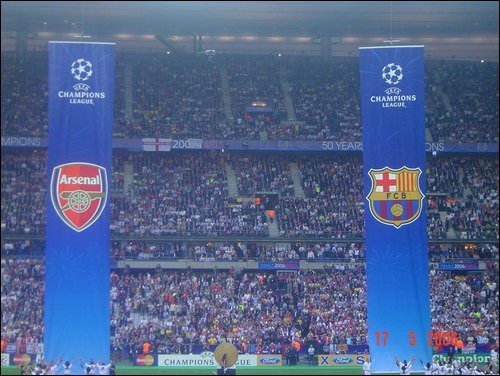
photo of team banners